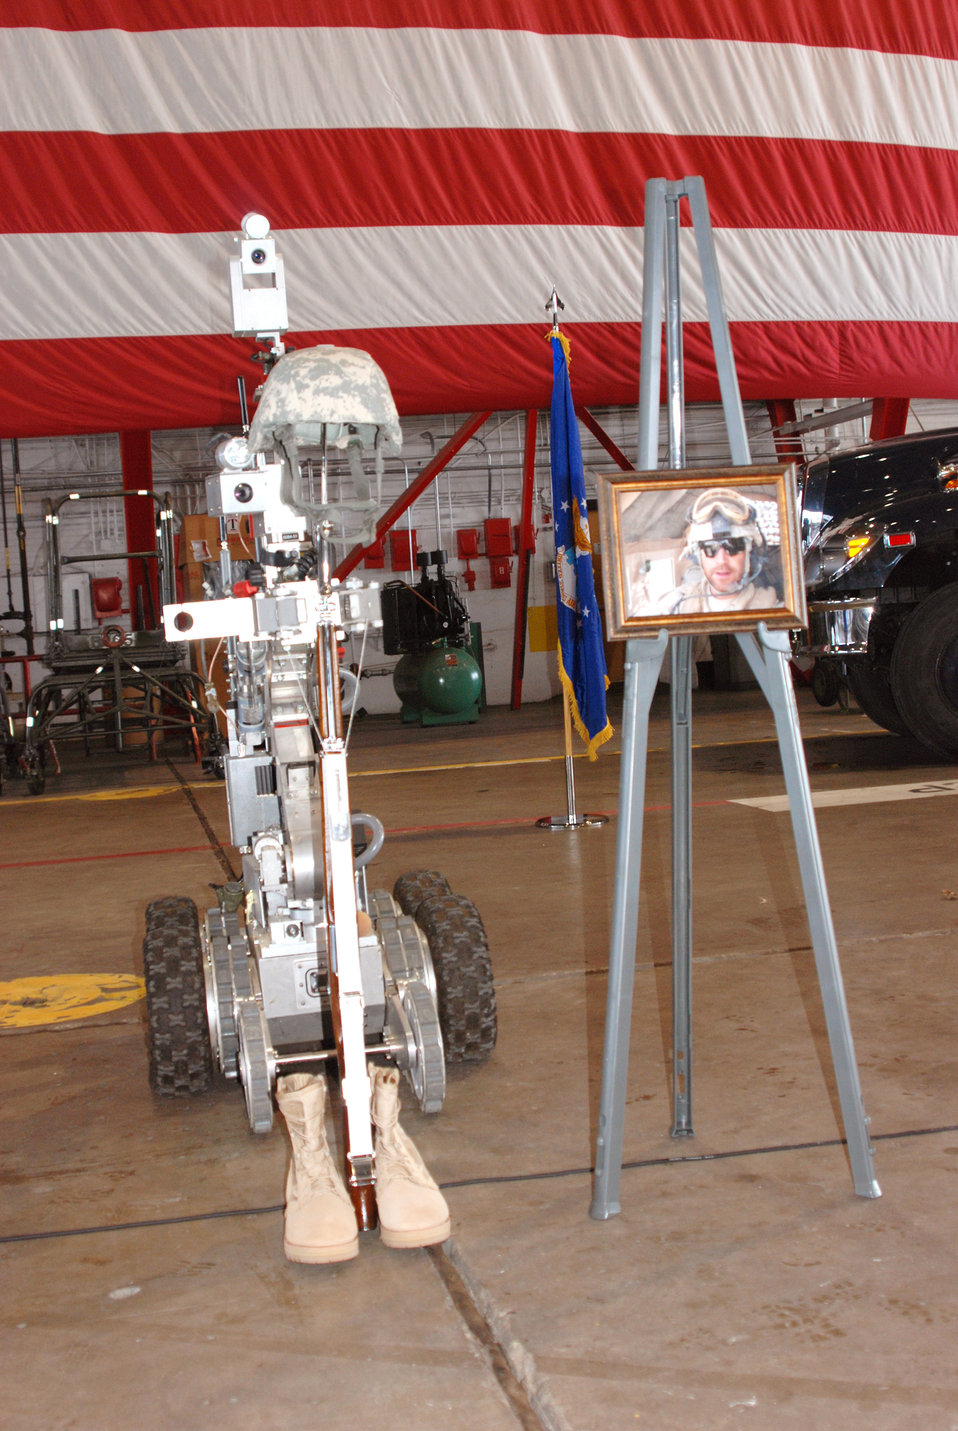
Airmen honor the fallen

An explosive ordnance disposal memorial tribute is on display at the memorial service for Tech. Sgt. Anthony Campbell, Jr. Jan. 9, 2010, at Scott AFB, Ill. Sergeant Campbell was killed in action in Afghanistan.